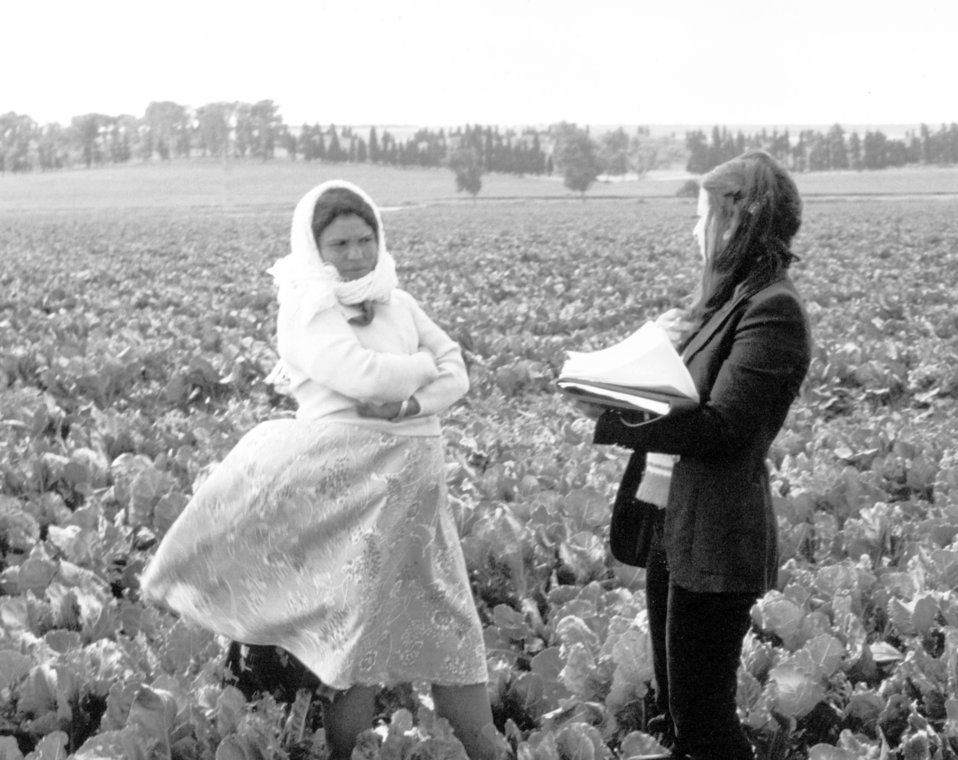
This photograph was taken during an Epidemiological Investigative Services (EIS) field assignment, investigating Dengue fever.